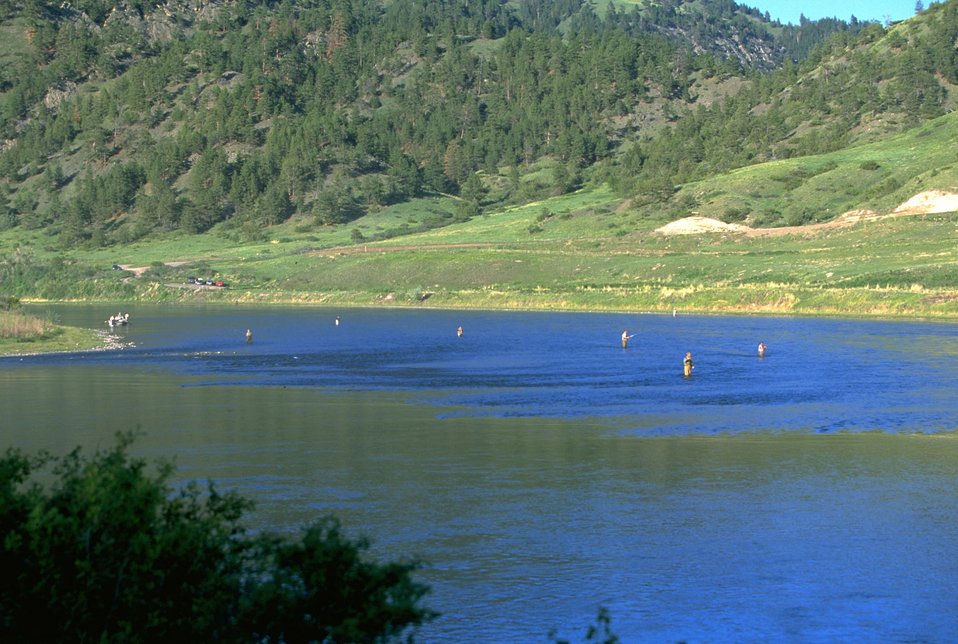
Fly Fishermen on the Missouri River